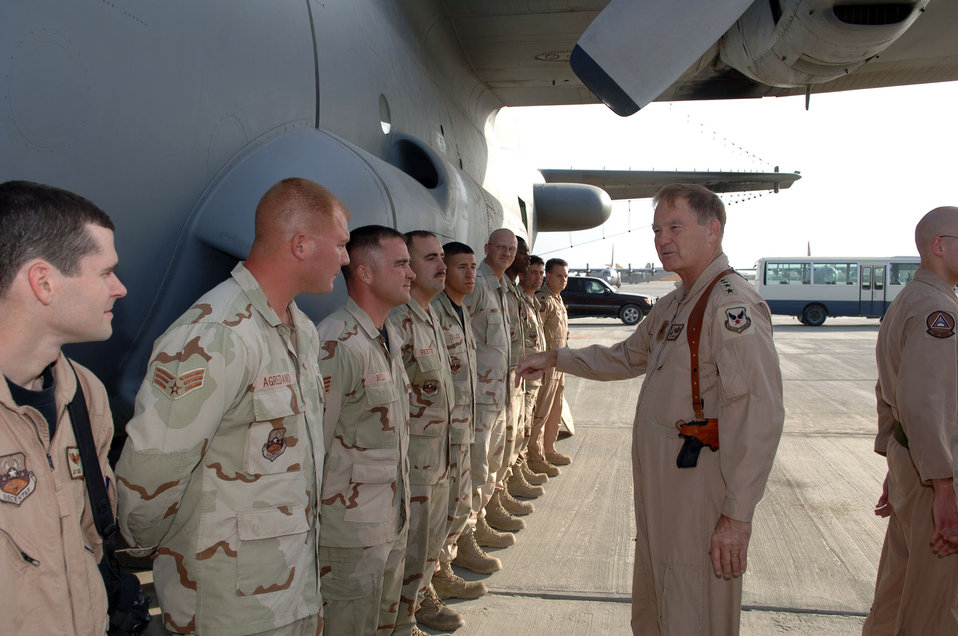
ACC commander praises role of Bagram Airmen

BAGRAM AIR FIELD, Afghanistan -- Gen. Ronald E. Keys talks with Airmen from the 455th Expeditionary Electronic Combat Squadron. General Keys met Airmen here Sept. 23 and 24 as part of his tour of U.S. Central Command area of responsibility installations. General Keys gave high praise for those serving their country as part of the ongoing Global War on Terrorism. He is the commander of Air Combat Command.